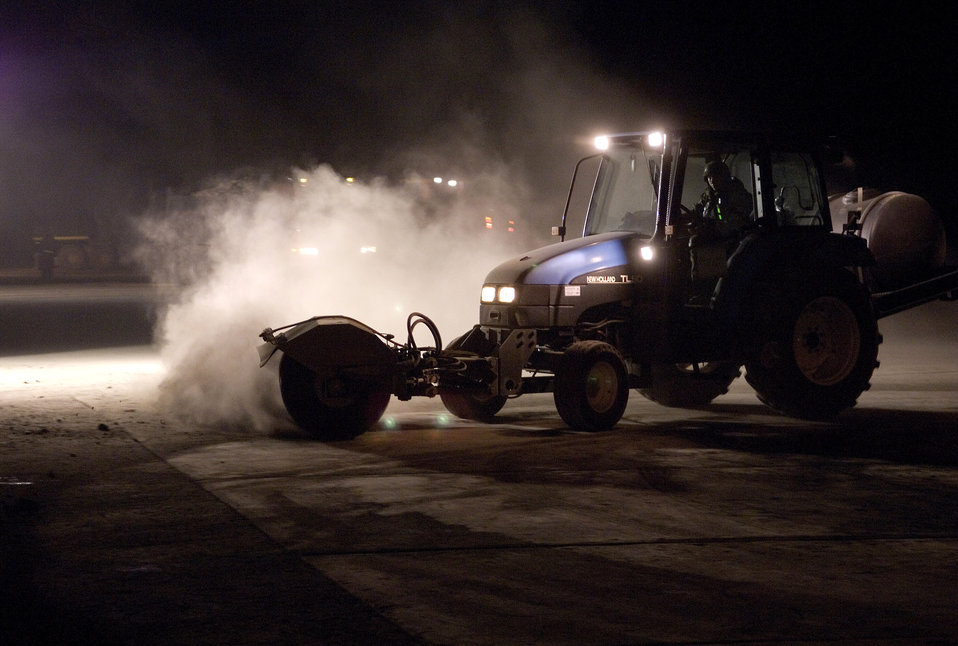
Repair team keeps Kunsan mission going

A member of the 8th Civil Engineer Squadron Airfield Damage Repair team clears debris from the runway surface April 19 at Kunsan Air Base, South Korea.The ADR teams do everything from crater repair to airfield lighting making it possible to get aircraft back in the air quickly. Kunsan AB is currently undergoing an operational readiness inspection to test the 8th Fighter Wing's ability to conduct its wartime mission.